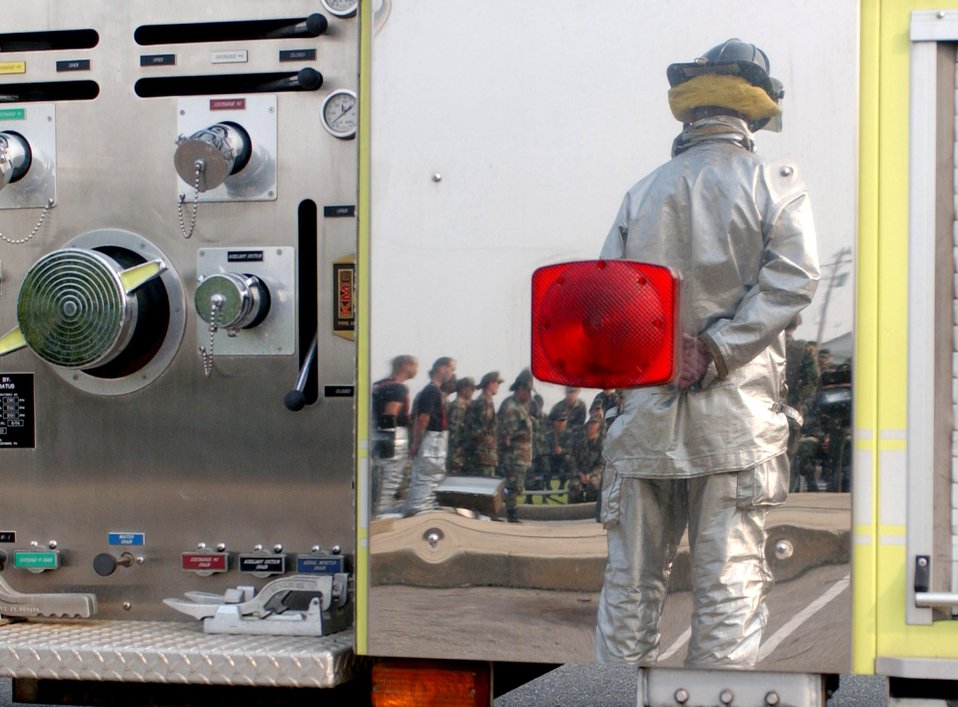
Kunsan Airmen remember Sept. 11

Tech. Sgt. Jeremy Pickett waits to ring the fire station bell during the Sept. 11, 2001, remembrance ceremony Sept. 11 at Kunsan Air Base, South Korea. The ceremony marked the sixth anniversary of the terrorist attacks in New York City, the Pentagon and Shanksville, Pa. Sergeant Pickett is a firefighter with the 8th Civil Engineer Squadron.